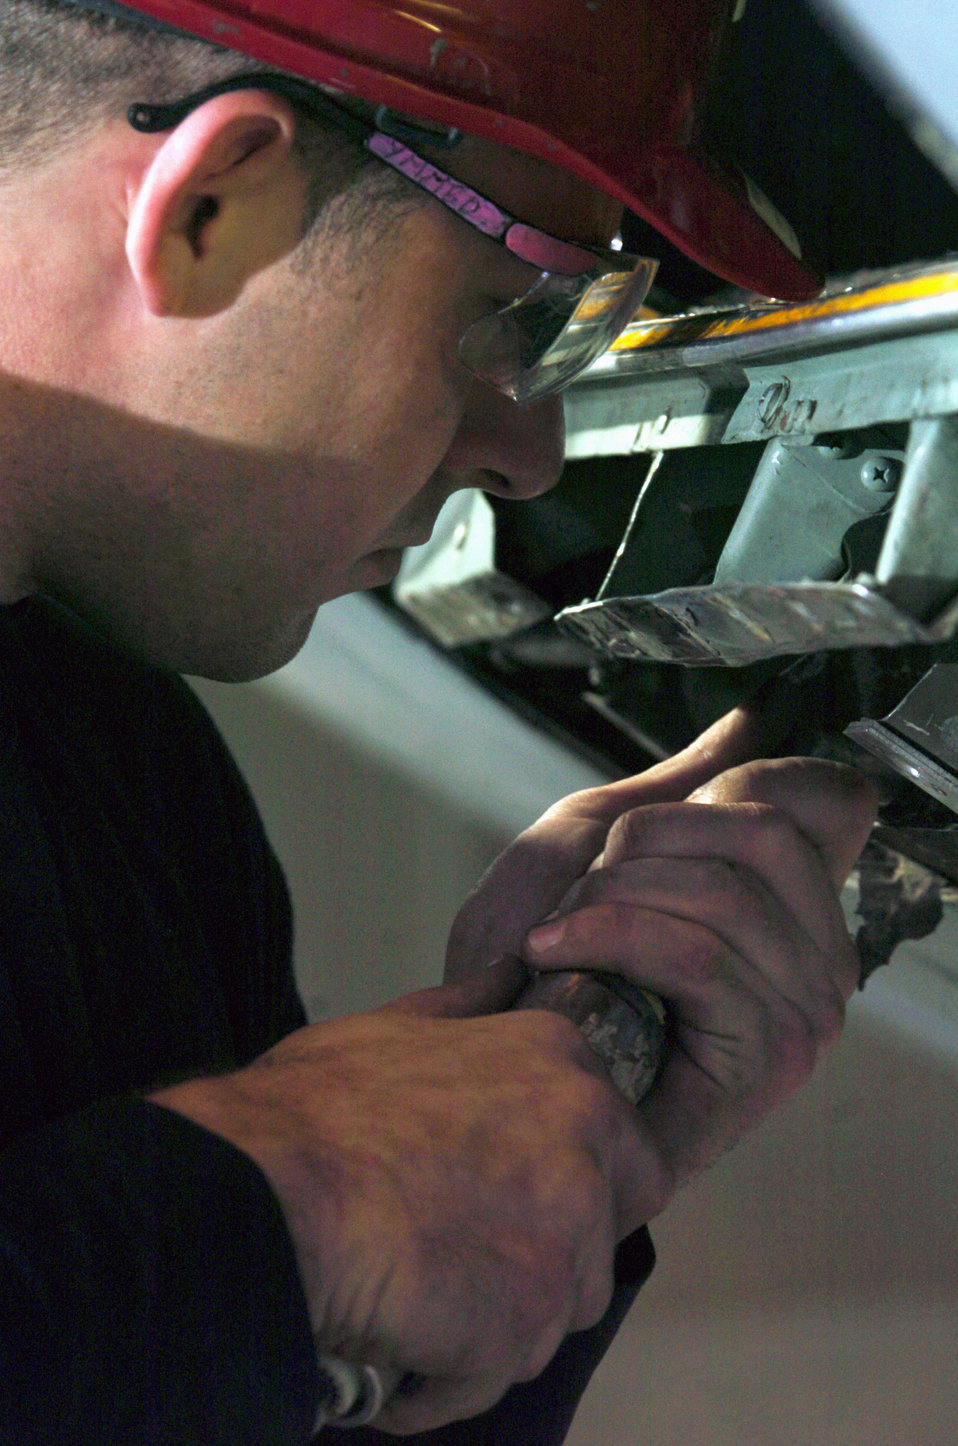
Hercules maintenance

YOKOTA AIR BASE, Japan - Senior Airman Matthew Dipasquale tightens a bolt underneath a C-130 Hercules during an isochronal inspection here Dec. 8. Airman Dipasquale is an aircraft structural technician from the 374th Maintenance Squadron.